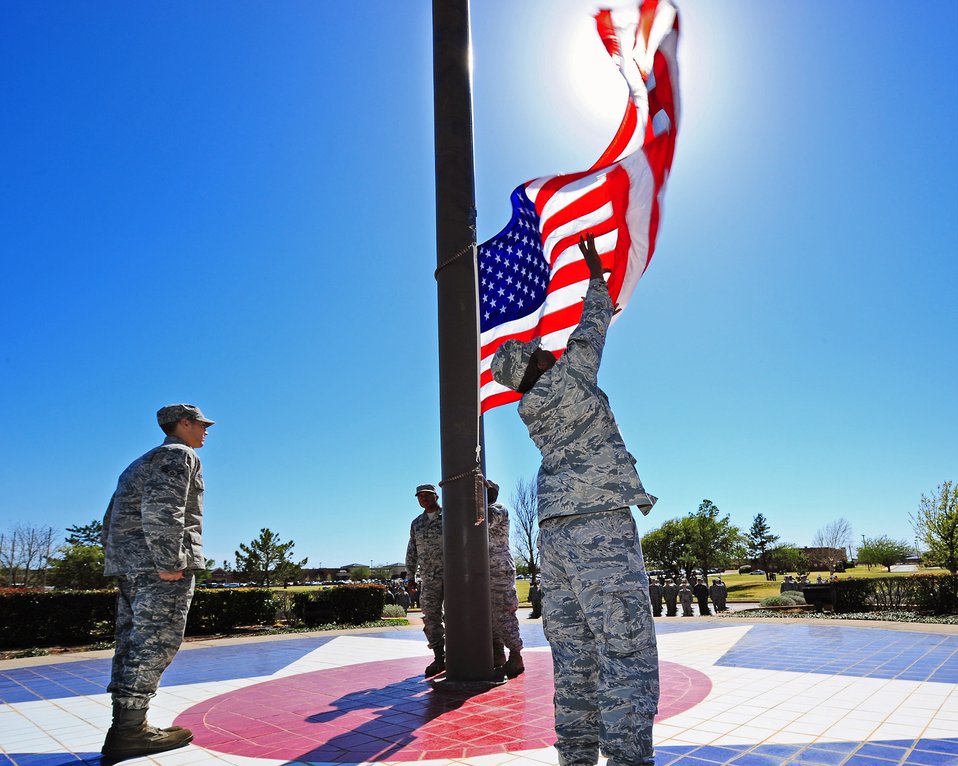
Day is done

A member of the honor guard at Dyess Air Force Base, Texas, retrieves the flag April 3 during a base retreat ceremony.